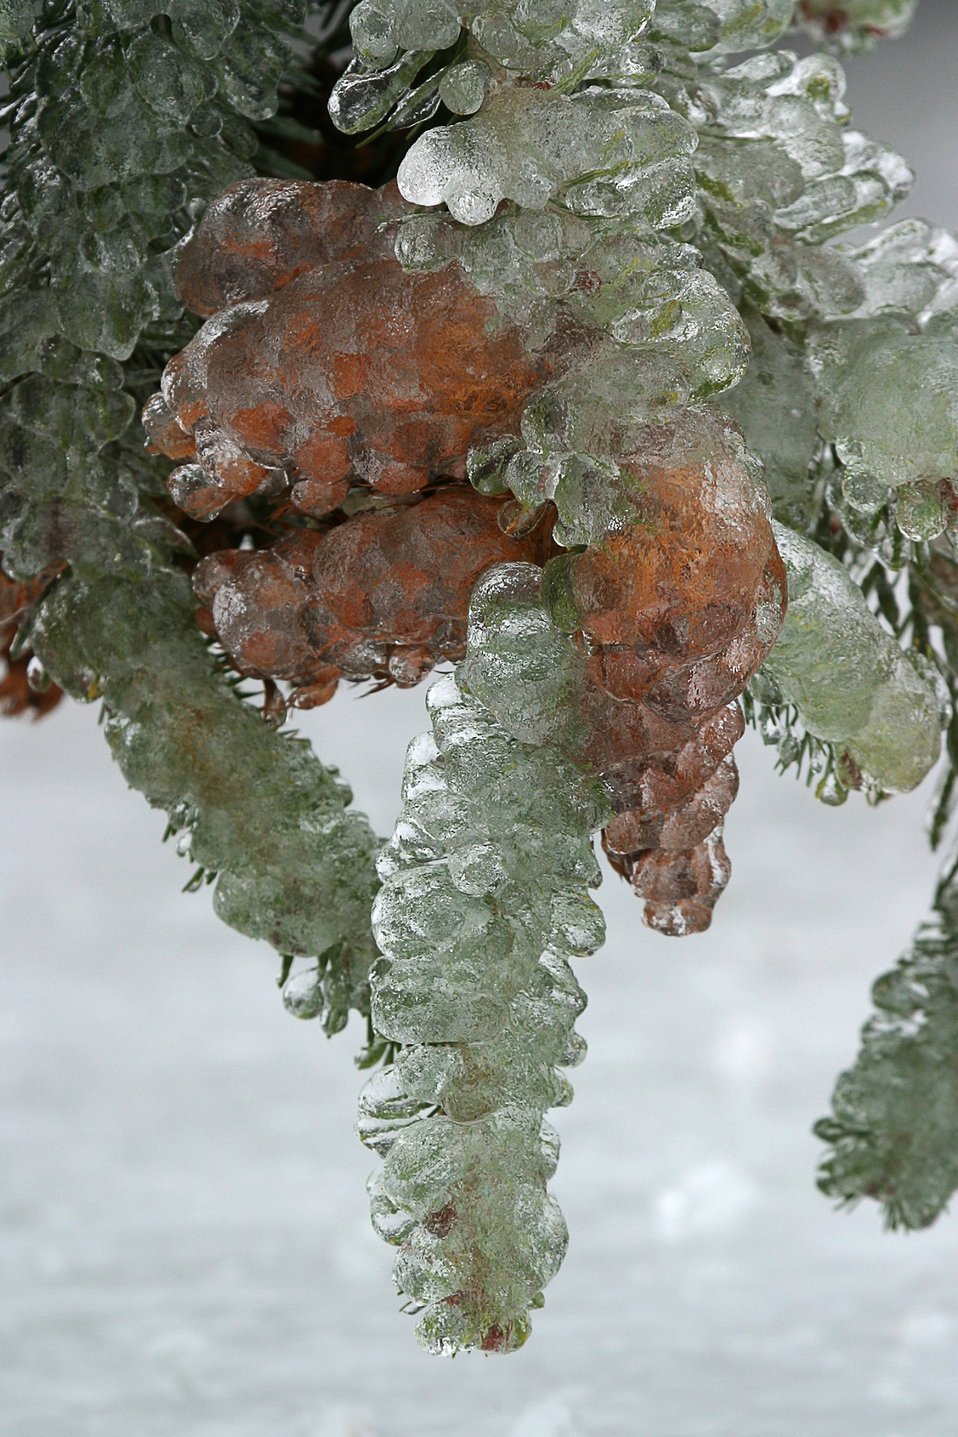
Snow and ice on Douglas Fir Bows and cones during the storm of January 2004.